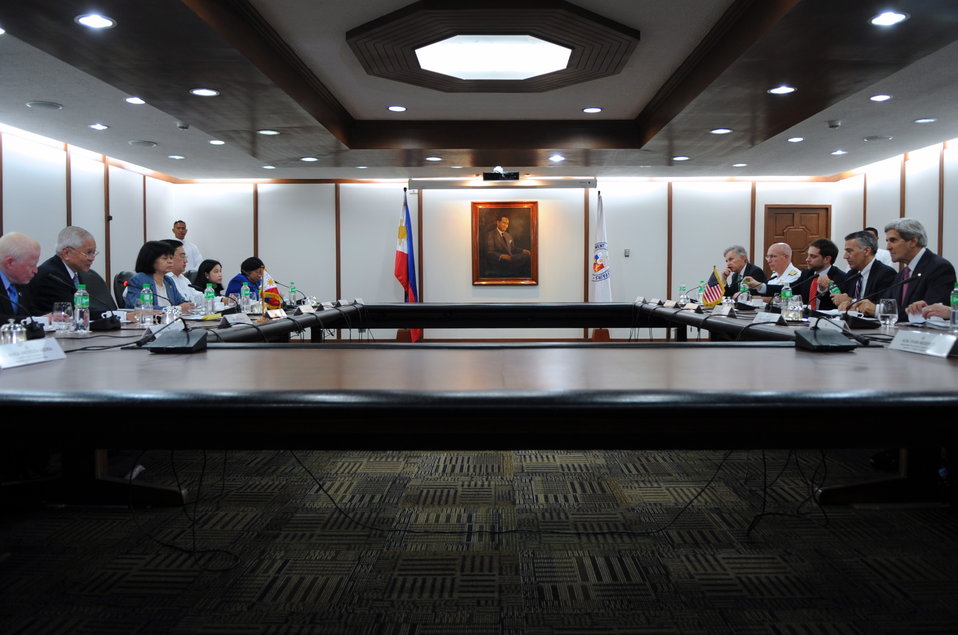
Secretary Kerry and Philippine Secretary Del Rosario Hold a Bilateral Meeting

Foreign Secretary Albert del Rosario of the Philippines, U.S. Secretary of State John Kerry, and their respective staff members sit across from one another before a bilateral meeting in Manila, Philippines, on December 17, 2013.